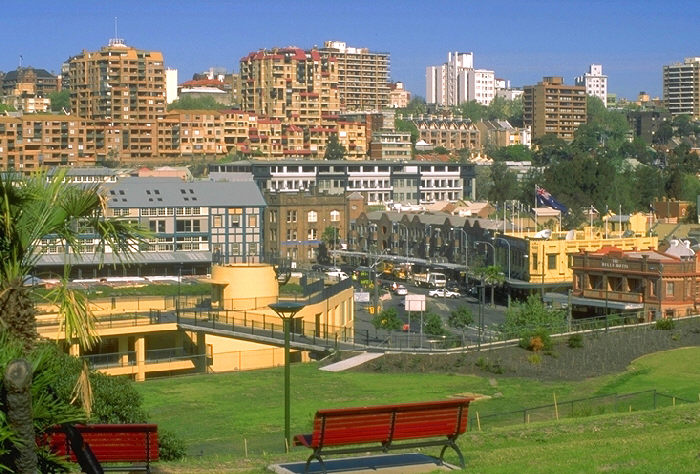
Sydney, Australia.